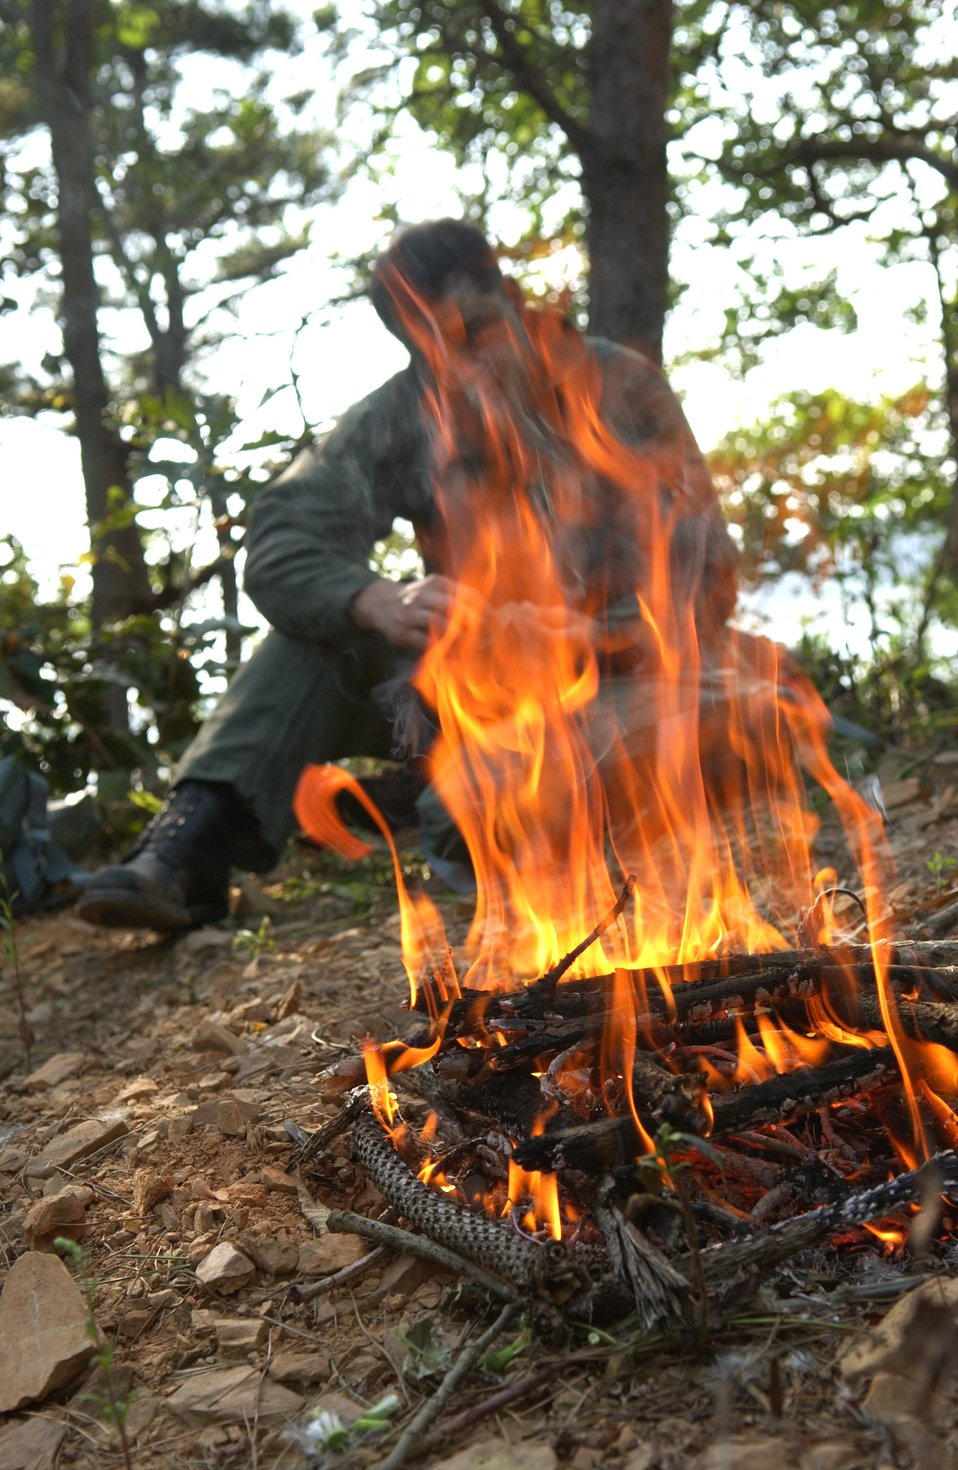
Life-saving training at Osan AB

Maj. Paul Neidhardt takes a break after a day of combat search and rescue training Sept. 21 near Osan Air Base, South Korea. Annual training is conducted by survival, evasion, resistance and escape instructors to reacquaint aircrew members with combat search and rescue procedures and techniques. Major Neidhardt is with the 25th Fighter Squadron at Osan AB.